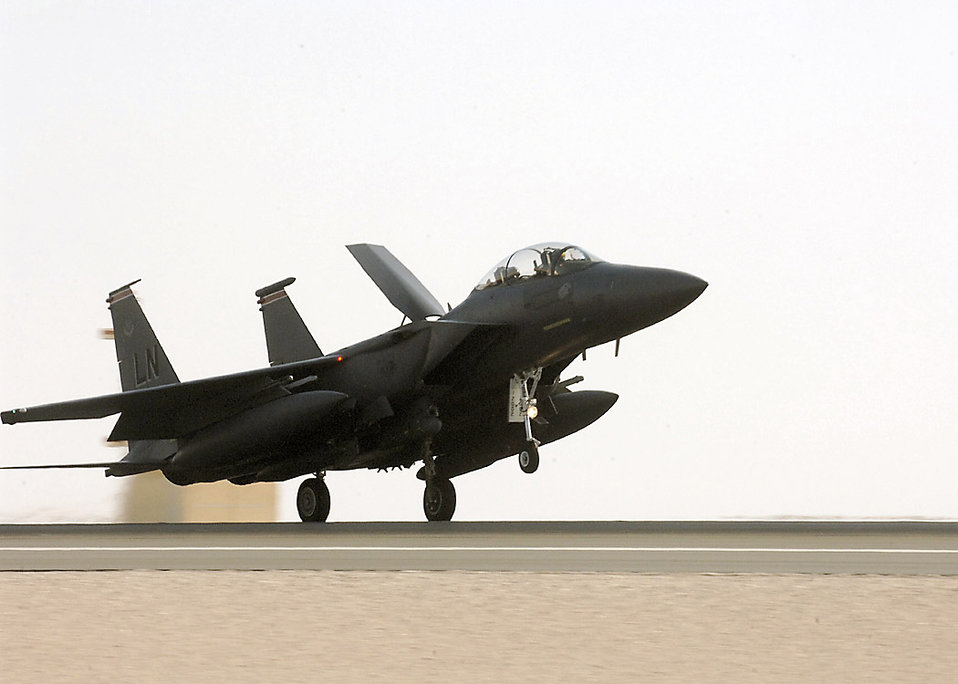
Nov. 10 airpower summary: F-15Es deter anti-Afghan forces

An F-15E Strike Eagle lands after a mission in Southwest Asia. The F-15Es and other coalition aircraft flew 115 close-air-support missions in Iraq and Afghanistan Nov. 10.